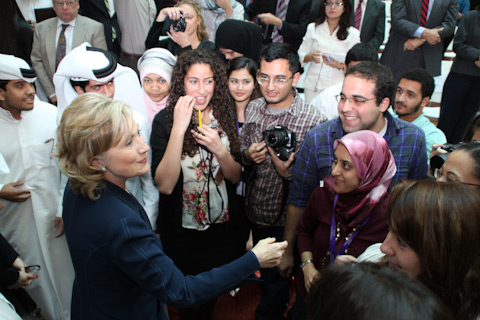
Secretary Clinton Travels to Qatar and Saudi Arabia

U.S. Secretary of State Hillary Rodham Clinton shakes hands with students after her Townterview at Carnegie Mellon Qatar in Doha, Qatar February 15, 2010.